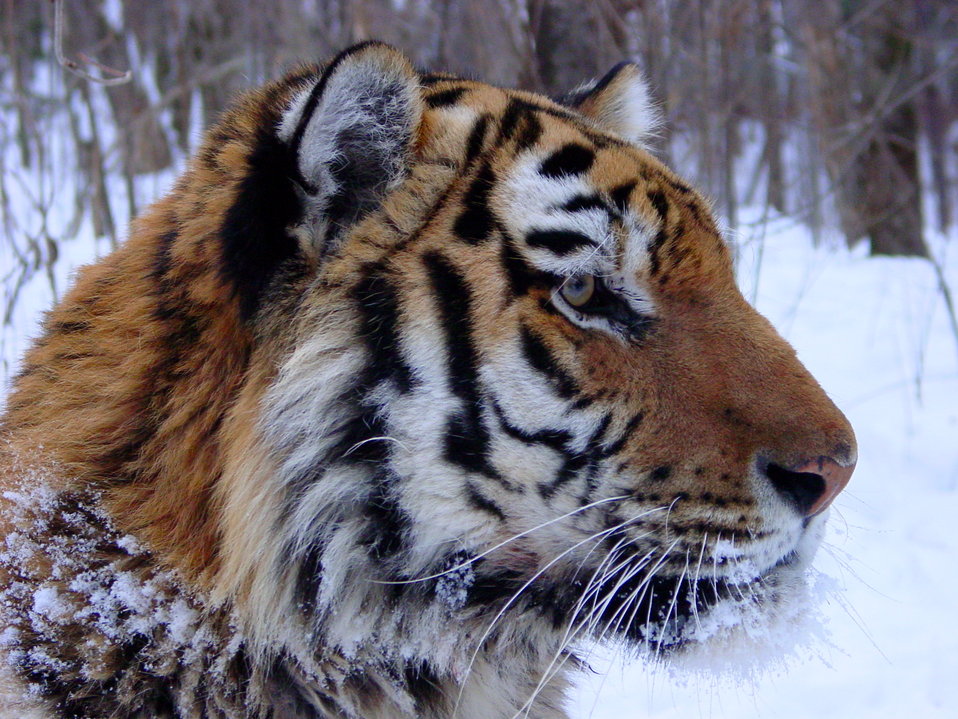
Tiger Amur

Amur tiger in winter.